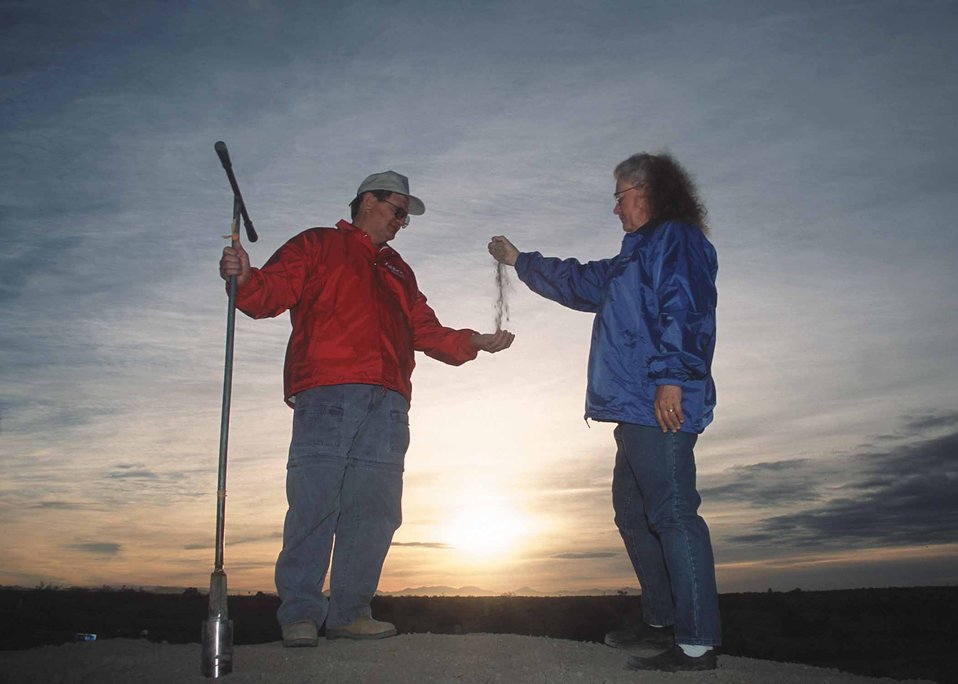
District Conservationist Bobbi McDerMott and technician Neal Hoy taking soil samples and checking soil moisture. Yuma, Az.